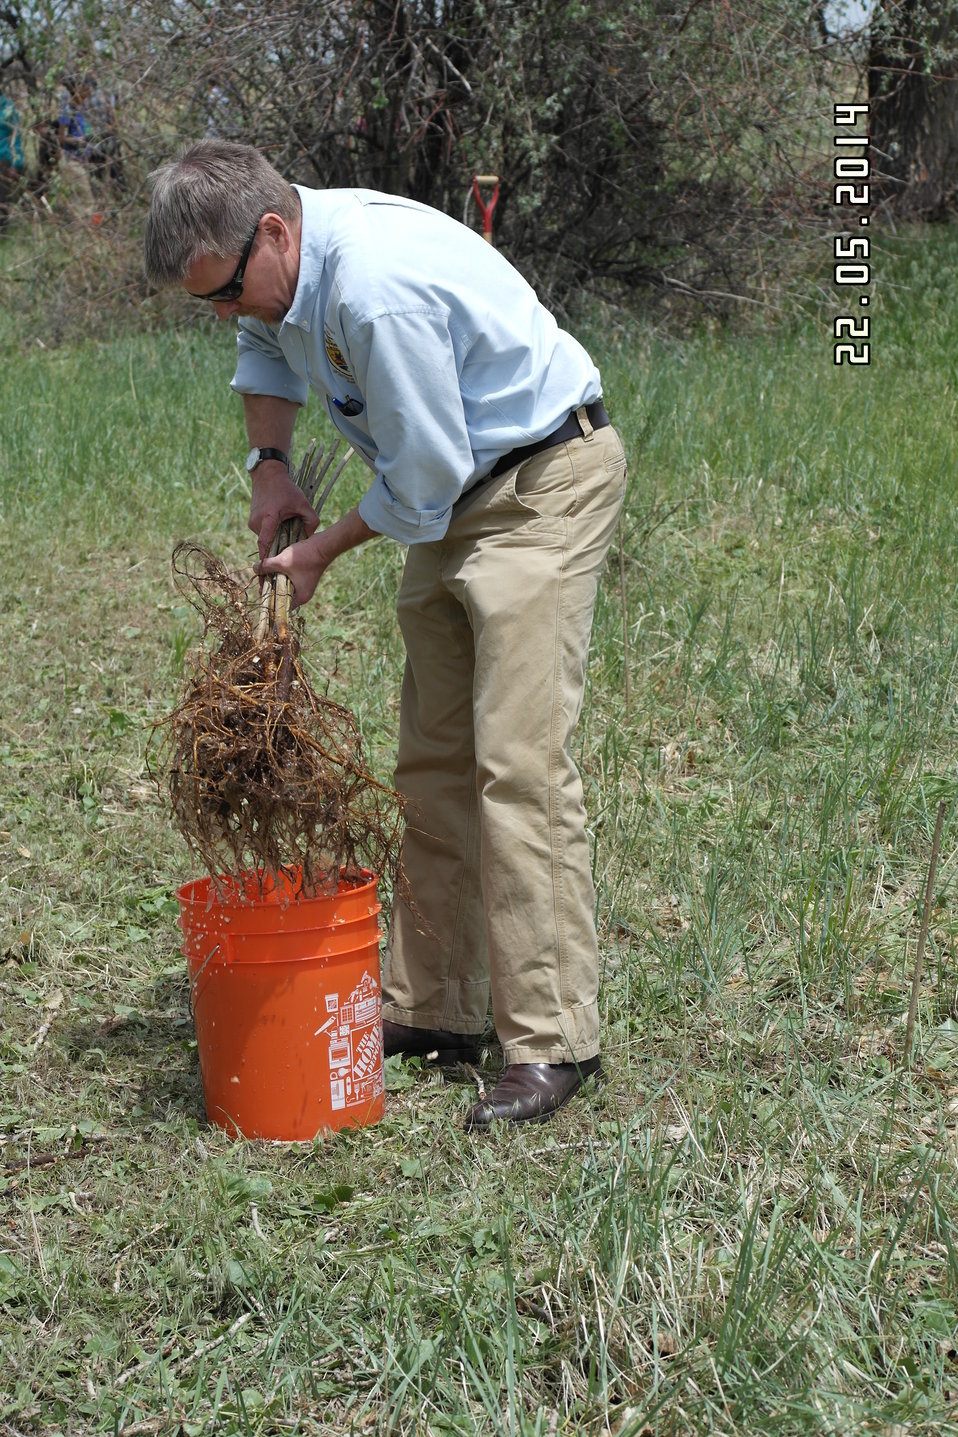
Deputy Regional Director Matt Hogan Planting Trees

Jewell made the announcement at an event at Rocky Mountain Arsenal National Wildlife Refuge outside Denver, Colorado, where she was joined by U.S. Department of Agriculture (USDA) Deputy Under Secretary for Natural Resources and the Environment Arthur “Butch” Blazer; Greg Knadle, Vice President for Government Relations of the National Fish and Wildlife Foundation (NFWF); Refuge Manager David Lucas and youth corps members of Groundwork Denver.